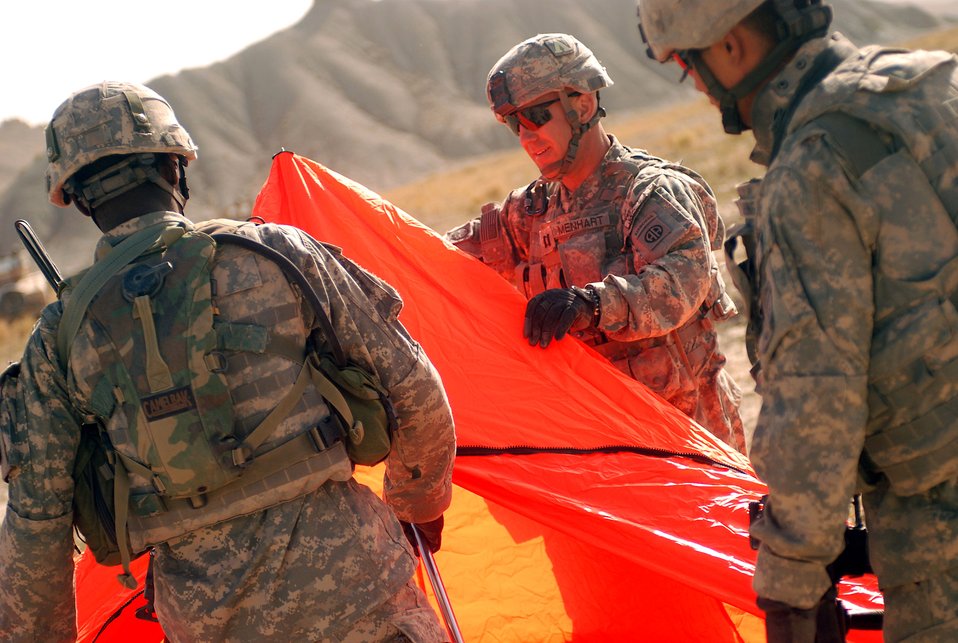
C-17 crews make record airdrop

Paratroopers with the 782nd Brigade Support Battalion, 4th Brigade Combat Team, 82nd Airborne Division set up a raised angle marker on a drop zone in Paktika Province, Afghanistan, October 11. The RAM designates the intended point of impact for approaching C-17 Globemasters IIIs on an air supply drop mission.